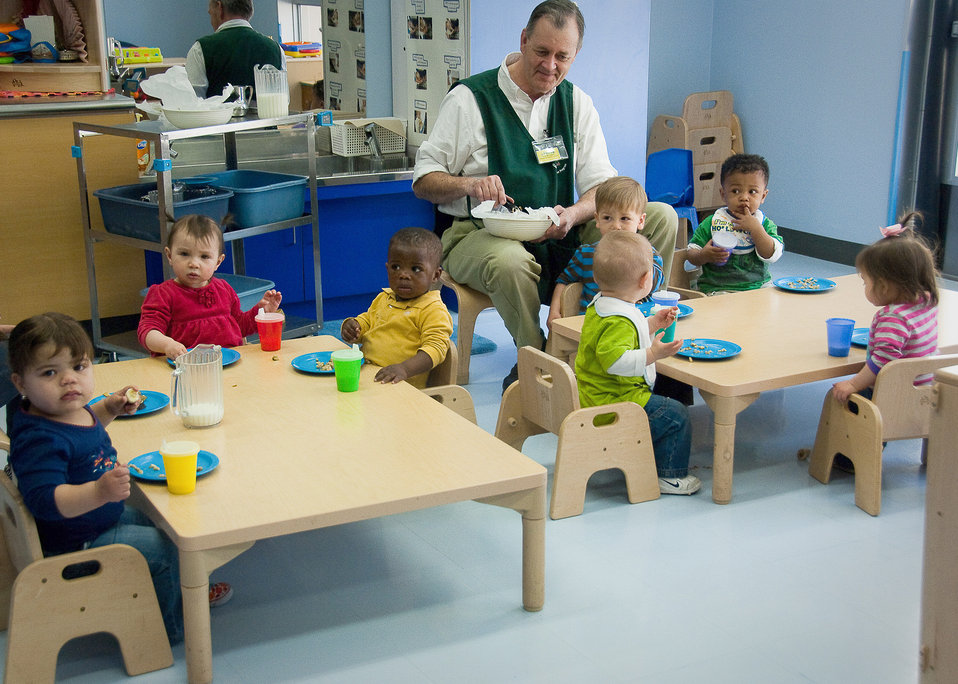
Yokota CDCs

Bob Huber, the pre-toddler room lead at the Yume Child Development Center at Yokota Air Base, Japan, feeds an afternoon snack to children April 12, 2011. Caregivers at Yokota Air Base CDCs work together to continue normal routines with the children by carrying on everyday activities in the aftermath of the earthquake and tsunami.